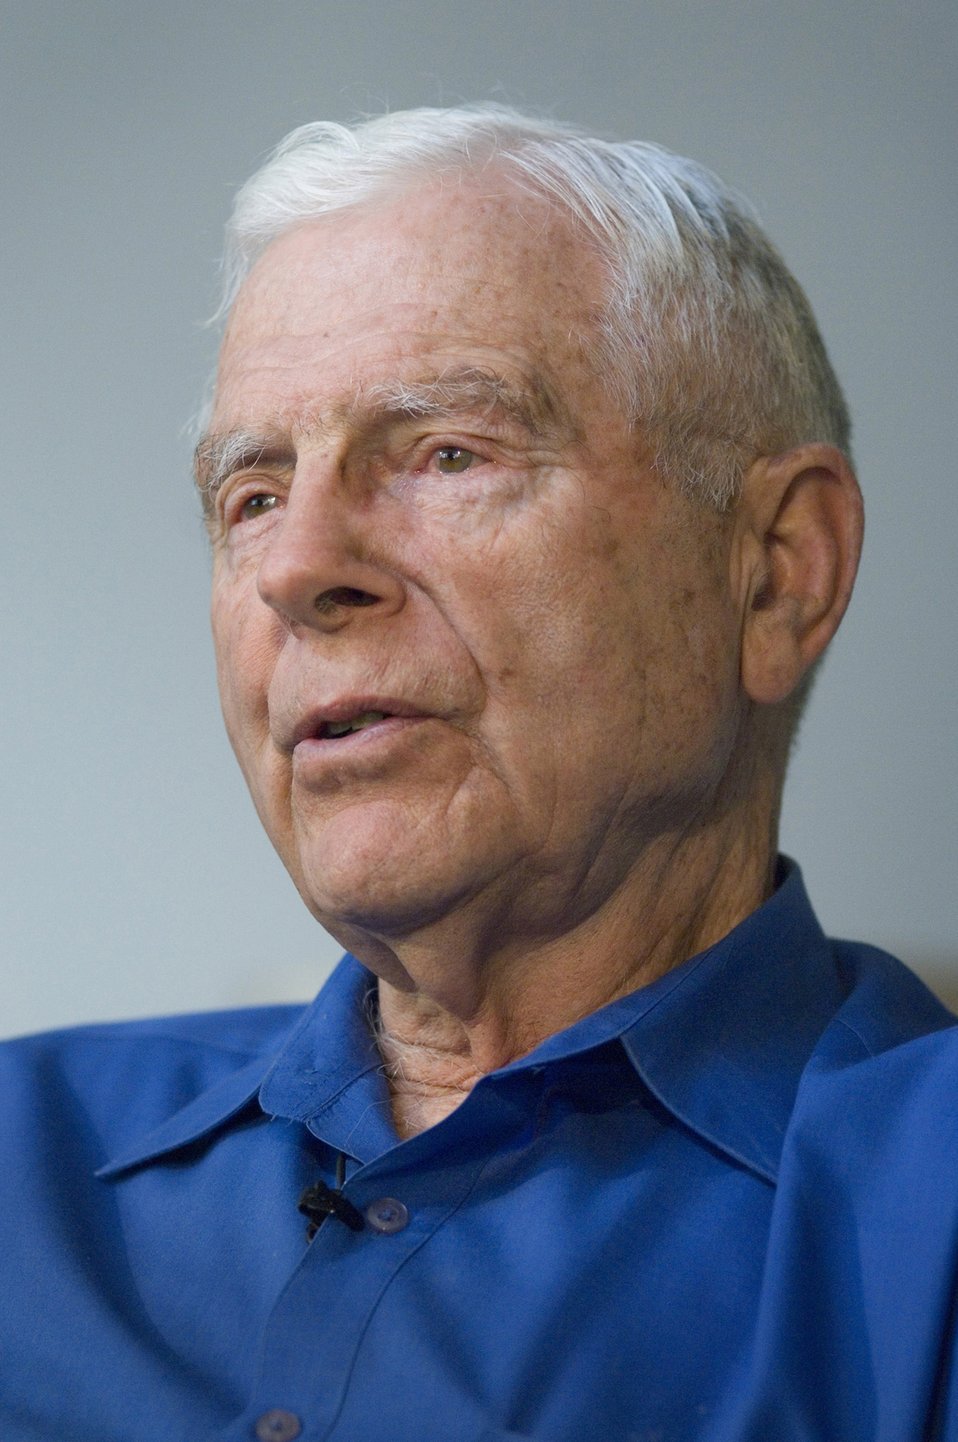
Retired general becomes Air Force's newest fighter ace

Retired Lt. Gen. Charles G. Cleveland shares stories of his time as a fighter pilot during the Korean War. General Cleveland has been recognized by the Air Force as a jet fighter ace 55 years after the end of the Korean War. Newly discovered documentation by the Russian air force as well as eyewitness accounts by General Cleveland's wingmen proved evidence to support converting two probable kills into confirmed kills from dog fights over